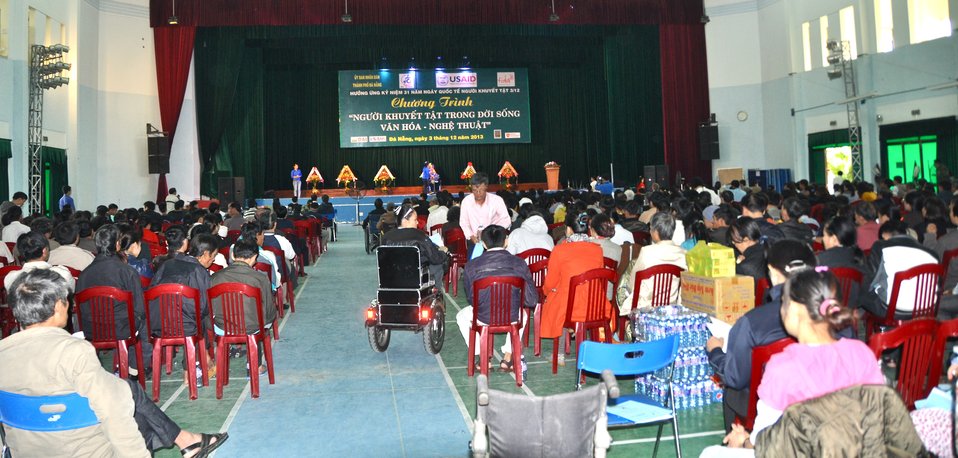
USAID Supports Commemoration of International Day of Persons with Disabilities 2013 in Danang

Danang, December 3, 2013.